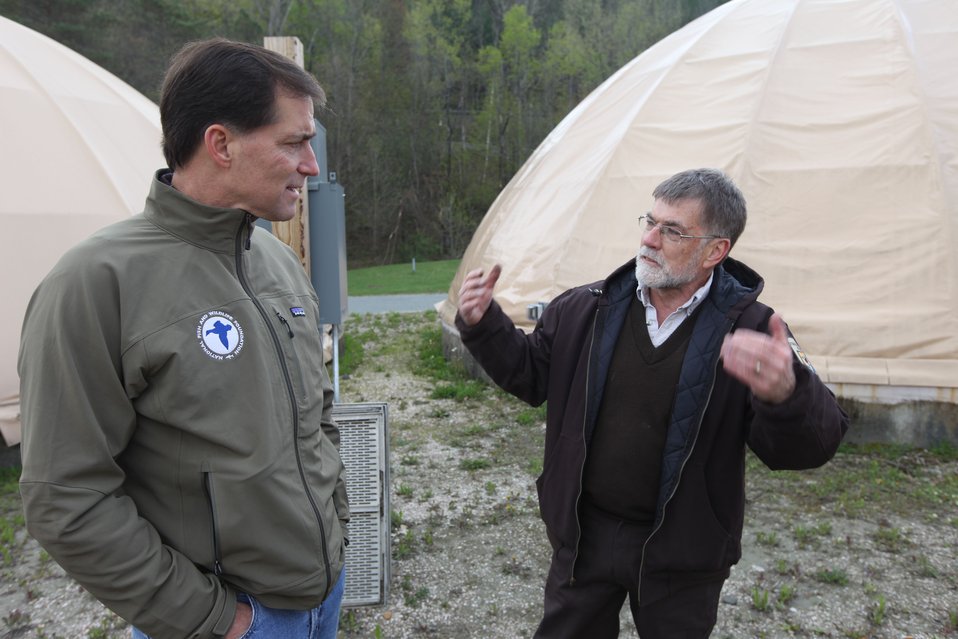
Service Director Dan Ashe and White River National Fish Hatchery Project Leader Ken Gillette

U.S. Fish & Wildlife Service Director Dan Ashe visits the Northeast Region
for a tour of the White River National Fish Hatchery in Bethel, Vermont on
April 27, 2012. The hatchery was devastated by Tropical Storm Irene and
Dan Ashe had the chance to meet and thank the staff for their heroic work.
Director Ashe also visited restoration/flood response/fish passage project
sites in Rochester, Vermont and met with local officials and staff from the
White River Partnership.